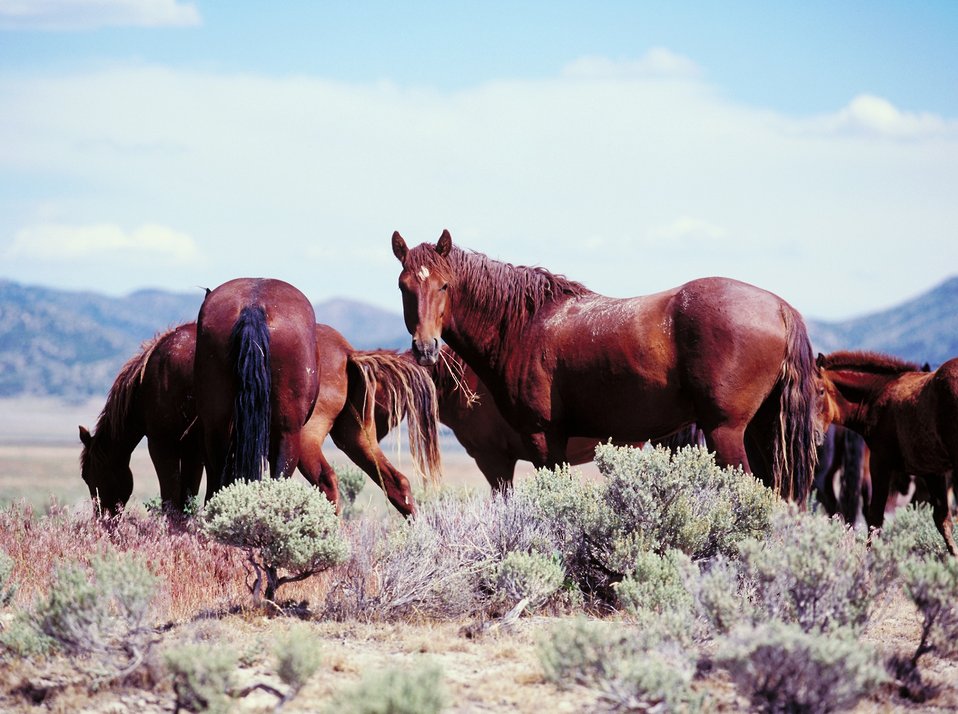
Onaqui Herd near Dugway, Utah.